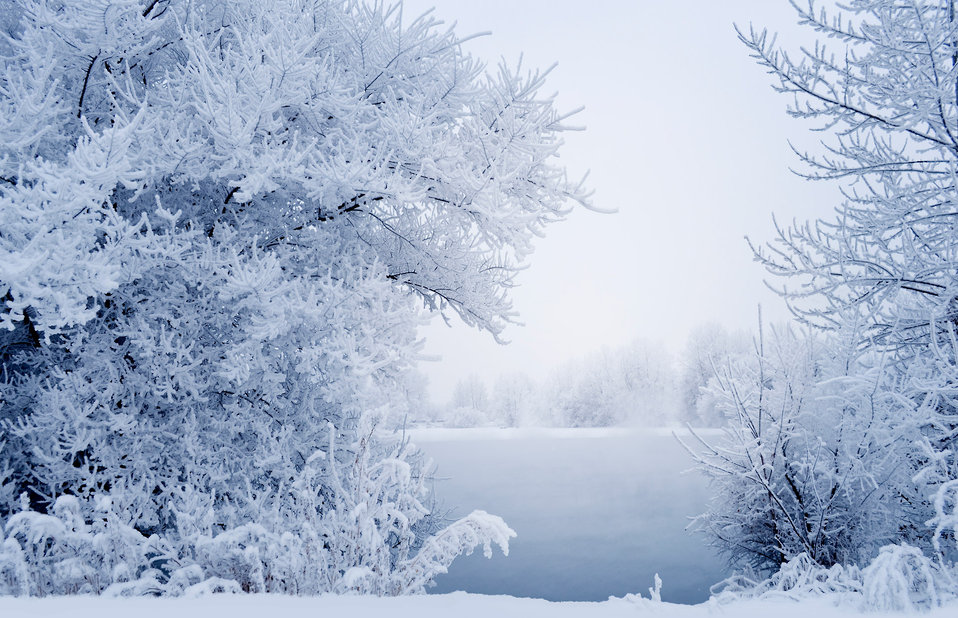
This winter

Snowy winter, all in a fog and snow..